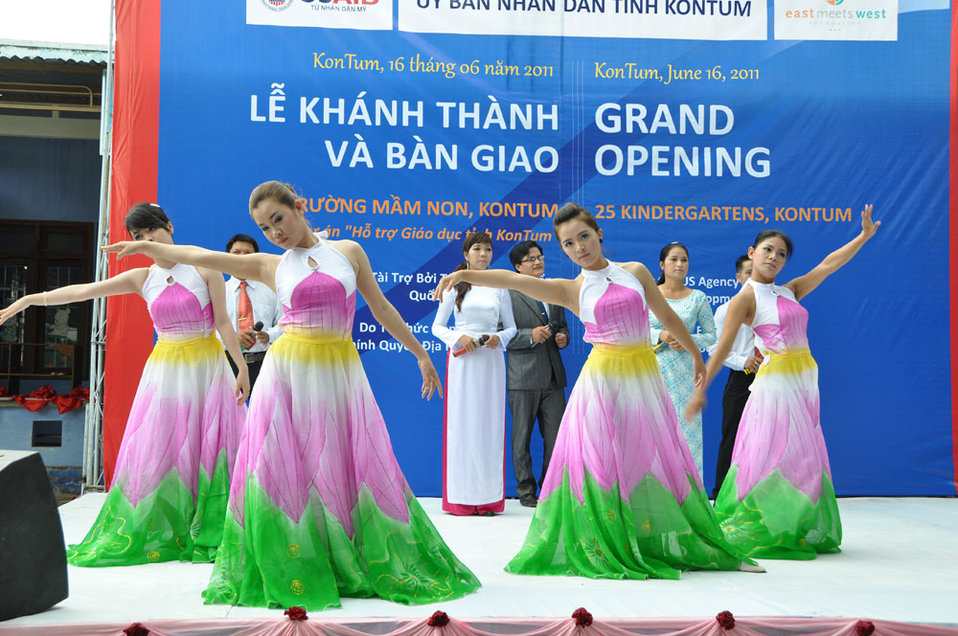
Singers and dancers perform at a kindergarten hand-over ceremony in Kon Tum.